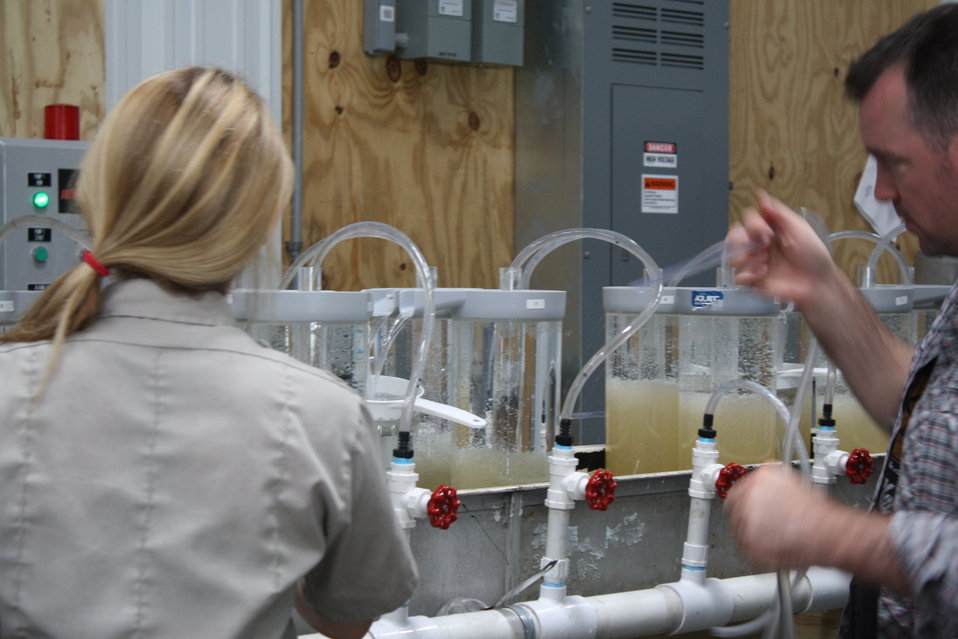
Nashua National Fish Hatchery welcomes regional office employees

Viewing equipment that separates healthy shad eggs from non-fertile eggs.